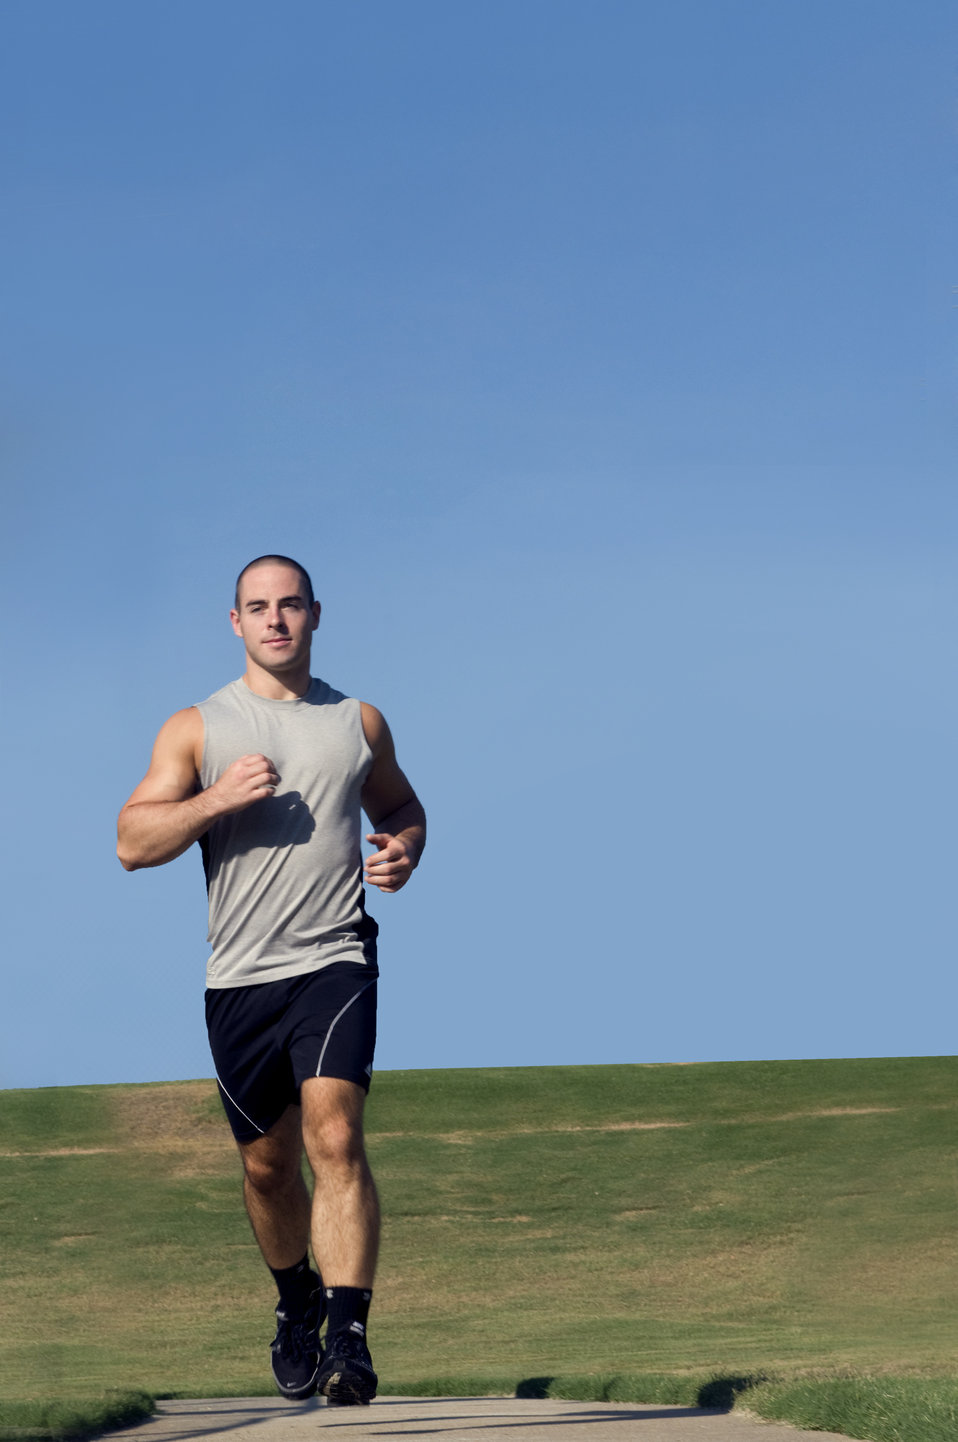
This young man was jogging on a Georgia recreational park trail on a sunny day. He was wearing a sleeveless, gray tank-top shirt, and black shorts, both of which protected this runner from the sun's harmful rays, and kept him cool throughout his run. His running shoes were specially designed for this kind of activity, affording the needed support, and comfort to his feet. He'd applied sunscreen to his sun-exposed skin, protecting him during his long-term ultraviolet light exposure Though he carried no water, he had brought bottled water, which he'd ingest when he reached his vehicle.